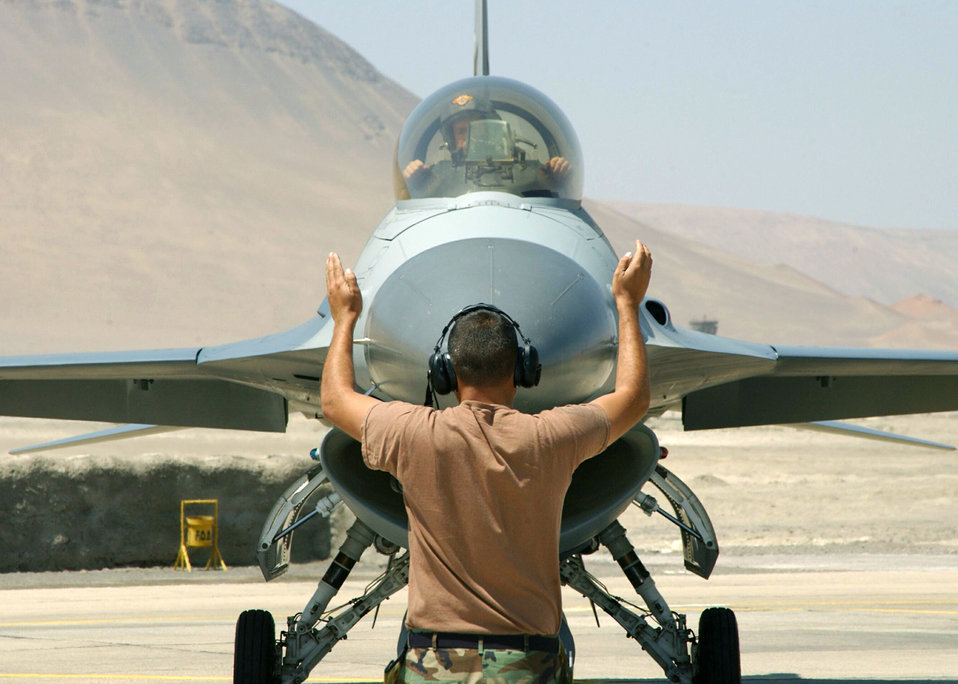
Man against machine

IQUIQUE, Chile -- Staff Sgt. Benny Trevino guides an F-16 Fighting Falcon pilot after a Salitre 2004 sortie with Brazilian F-5s. Salitre 2004 is a multinational air combat training exercise taking place through Oct. 8 here at Los Condores Air Base. Air forces from Chile, Argentina and Brazil are joining more than 100 U.S. Airmen for the exercise. Participants are here to sharpen air-combat skills, exchange air operations and tactics, and promote closer relationships among American nations. Sergeant Trevino is with the New Mexico Air National Guard.